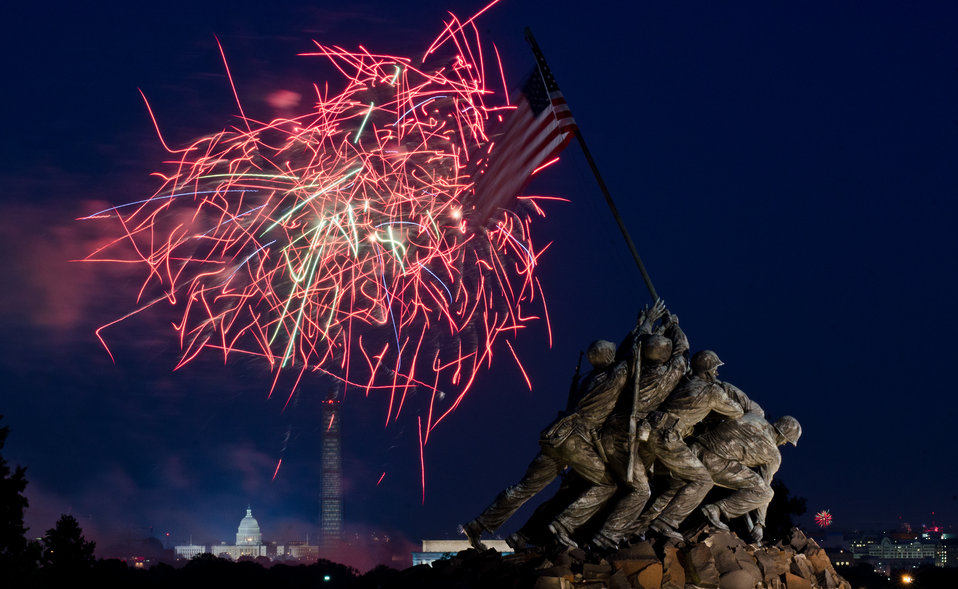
Independence Day celebration fireworks are seen from the Iwo Jima, U.S. Marine Corps Memorial in Arlington, VA on Jul. 4, 2013. In the distance are the Lincoln Memorial, the U.S. Department of Agriculture (USDA) Yates Building (dark red brick building), the Washington Monument (with scaffolding), and the U.S. Capitol building in Washington, D.C.